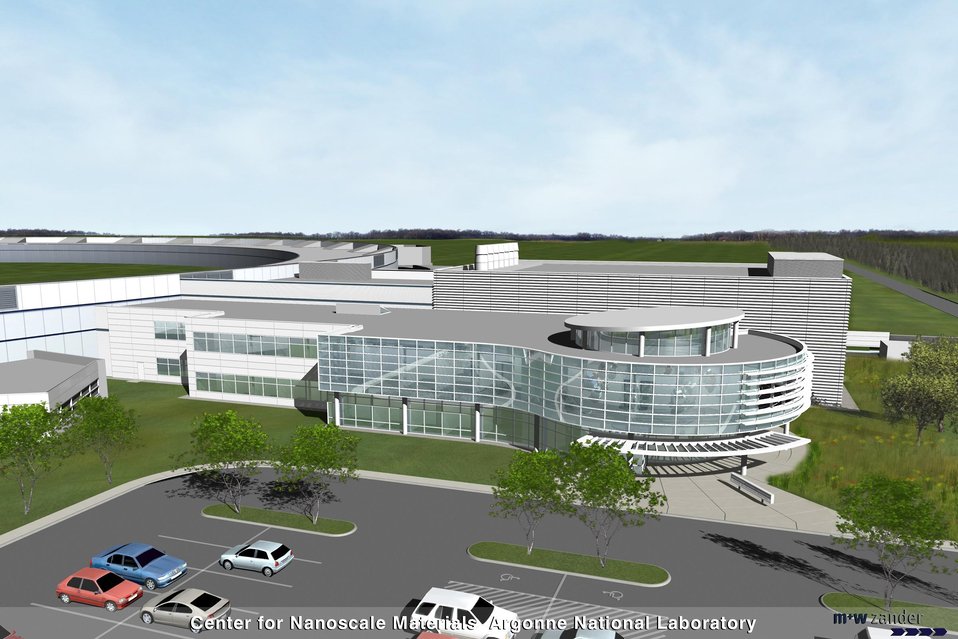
ARTIST'S CONCEPT OF THE CENTER FOR NANOSCALE MATERIALS AT ARGONNE NATIONAL LABORATORY.

THE NANOSCALE SCIENCE RESEARCHER CENTERS (NSRCS) SUPPORTED BY BASIC ENERGY SCIENCES WILL BE RESEARCH FACILITIES FOR THE SYNTHESIS, PROCESSING, AND FABRICATION OF NANOSCALE MATERIALS. THEY WILL BE COLLOCATED WITH EXISTING USER FACILITIES TO PROVIDE SOPHISTICATED CHARACTERIZATION AND ANALYSIS CAPABILITIES. IN ADDITION, NSRCS WILL PROVIDE SPECIALIZED EQUIPMENT AND SUPPORT STAFF NOT READILY AVAILABLE TO THE RESEARCH COMMUNITY. NRSCS WILL BE OPERATED AS USER FACILITIES AND BE AVAILABLE TO ALL RESEARCHERS.